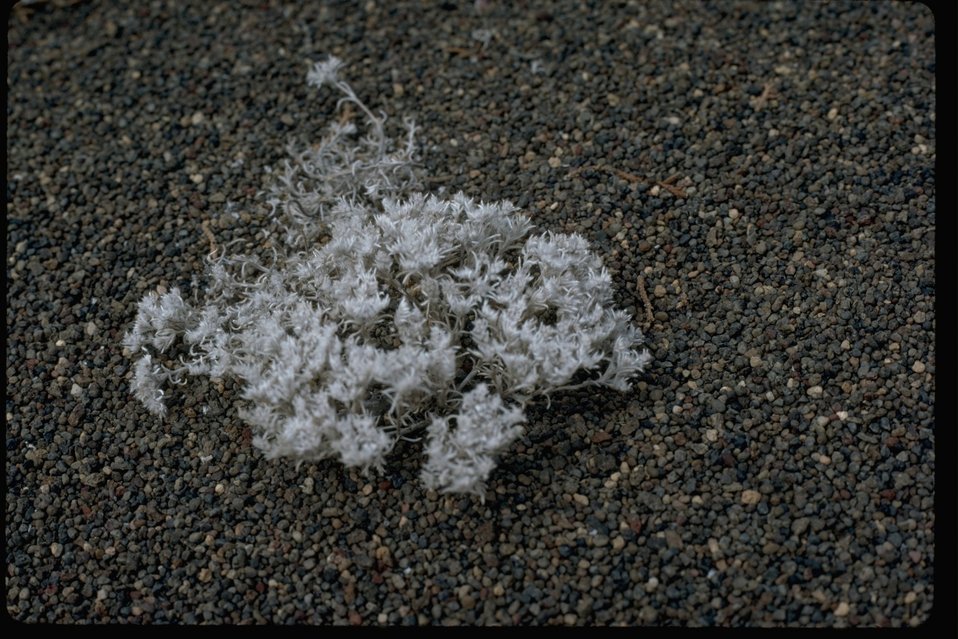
Wildflower found in the Badlands Wilderness Study Area. OR 5-21.